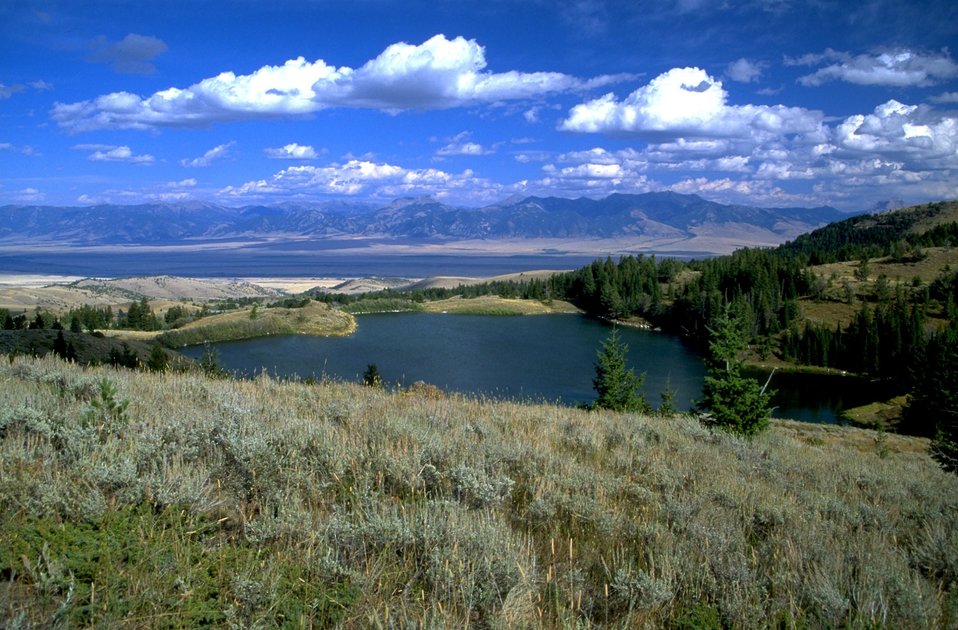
Axolotl Lake with Spanish Peaks in the background